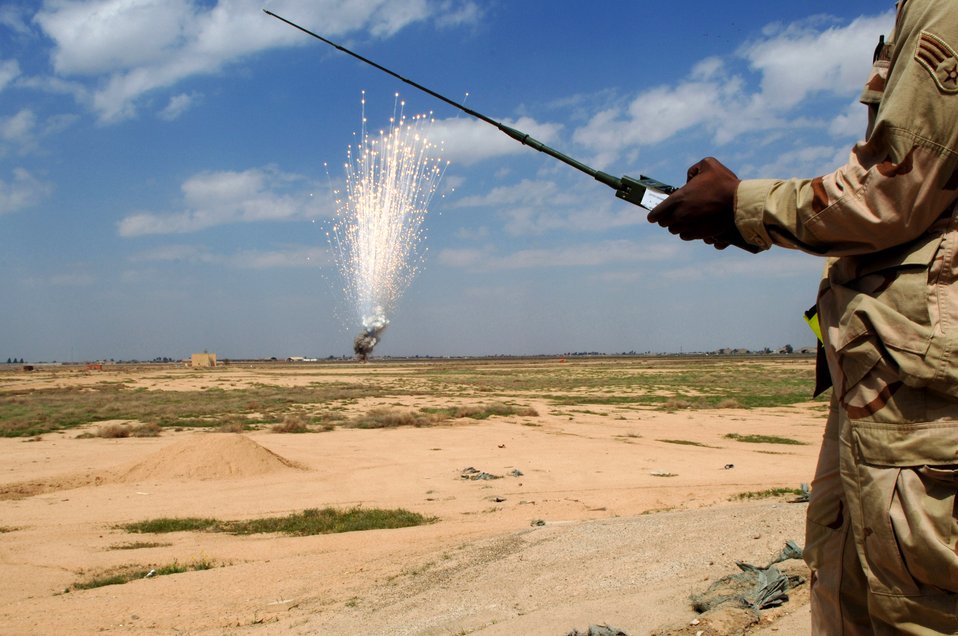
Ordnance disposal makes for no ordinary day

An Airman with the 332nd Expeditionary Civil Engineer Squadron's Explosive Ordnance Disposal Flight at Balad Air Base, Iraq, safely detonates unserviceable, excess and dangerous ordnance.